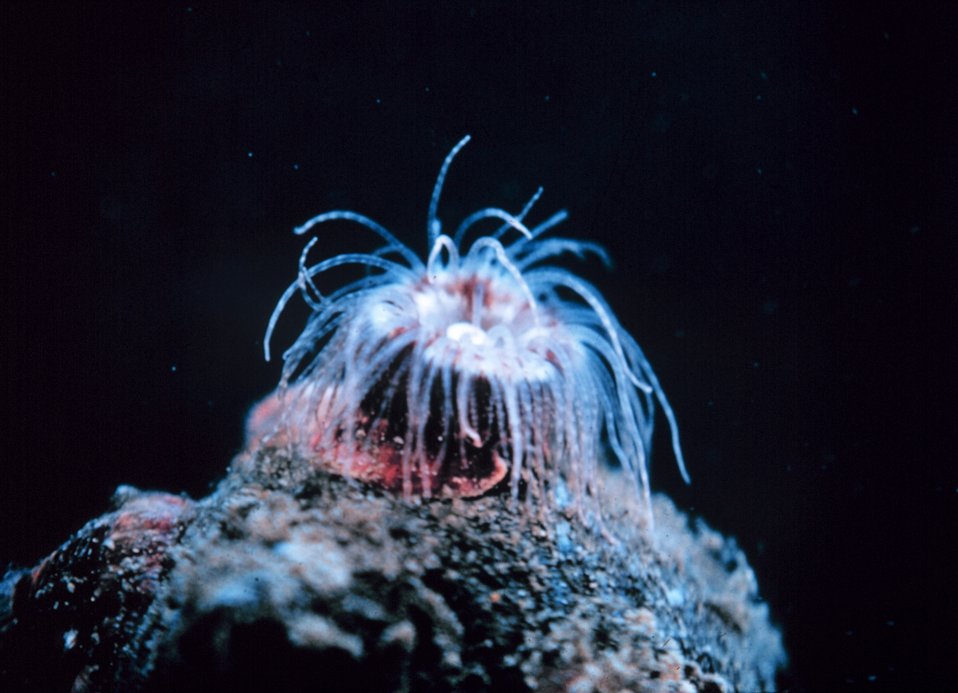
Anemone